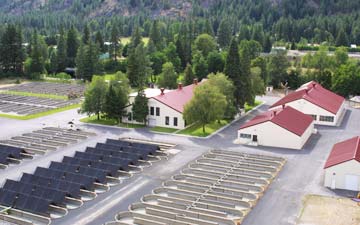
Leavenworth National Fish Hatchery

An aerial view of Leavenworth National Fish Hatchery (NFH), which is one of three fish hatcheries in the Leavenworth Fisheries Complex in north central Washington. The Leavenworth NFH serves as the administrative headquarters in this Complex.